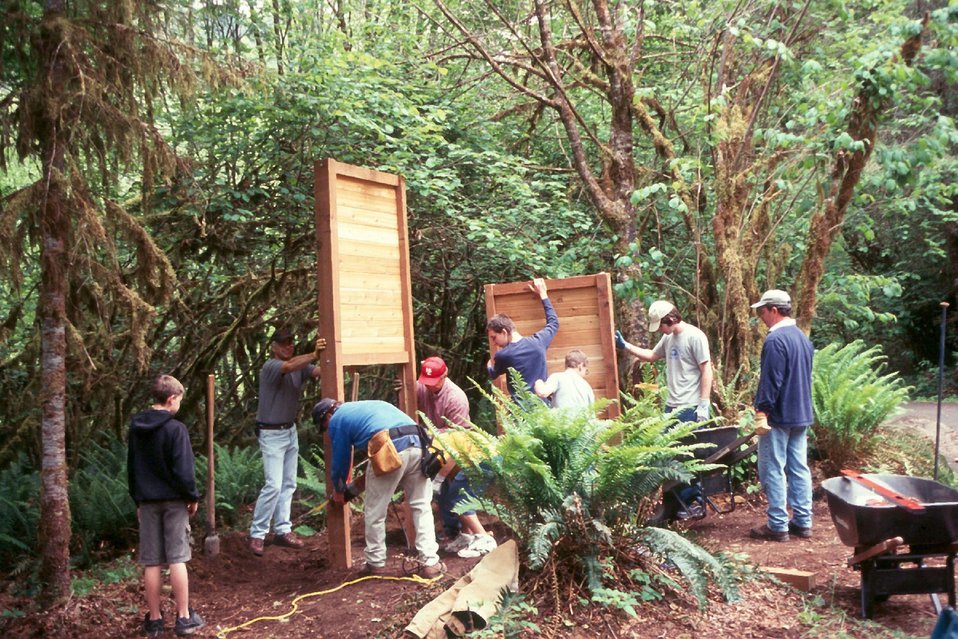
Boy Scouts from Eugene Troop 100 are installing an interpretive Kiosk at Clay Creek Recreation Site.